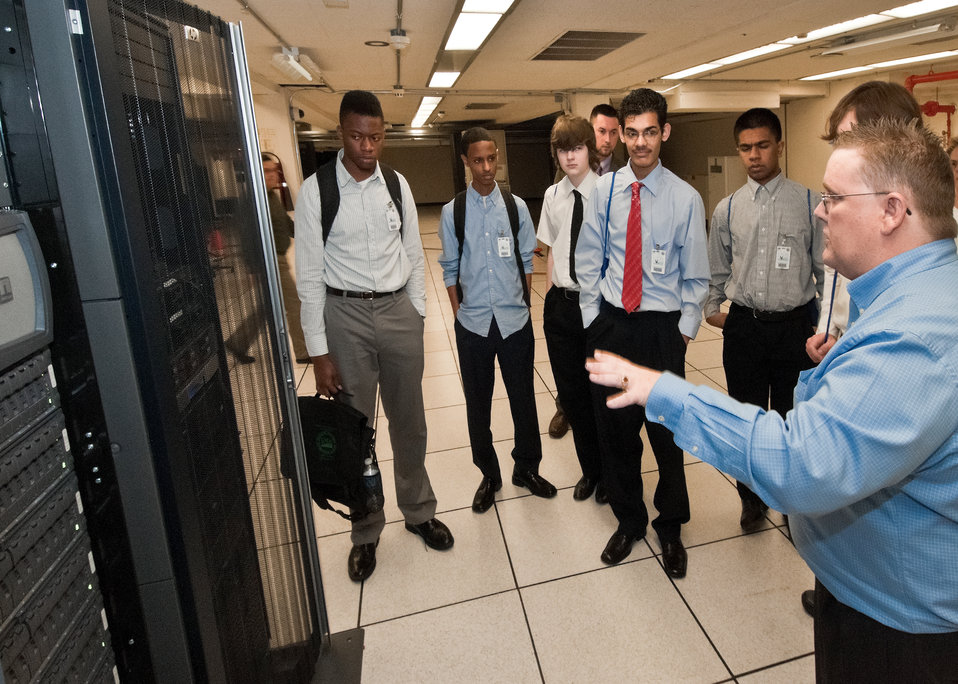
From left: David Thompson, Eleanor Roosevelt High School, Greenbelt, Maryland, Nebil Maeruf, Patrick Lehan, Moshin Khan and Adam Hussien, Springbrook High School, Silver Spring, Maryland members of the Academy of Information Technology listen to Mike Hubenschmidt, Enterprise Systems Manager, The Engle Group explain the state of the 2010 email system and support systems for applications at the United States Department of Agriculture (USDA) during the annual USDA Information Technology Job Shadow Day on Wednesday, April 13, 2011. The Information Technology Job Shadow Day is an opportunity for students from local high schools to learn the breadth and depth of information technology at USDA and how it is applied the department. Students toured the Network Operations Center, the Badging Office and had a lecture on geospatial technology.